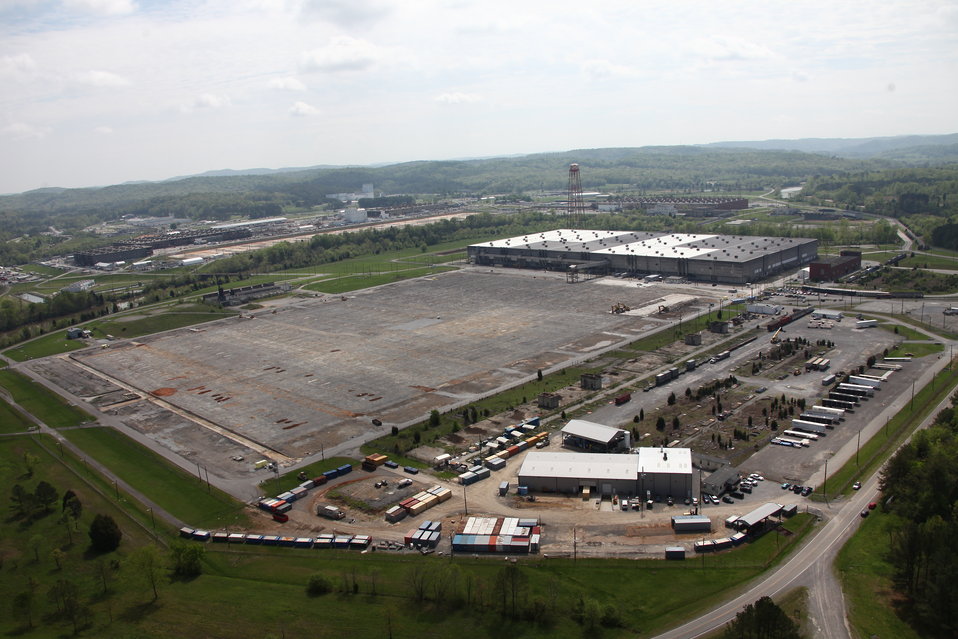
ETTP